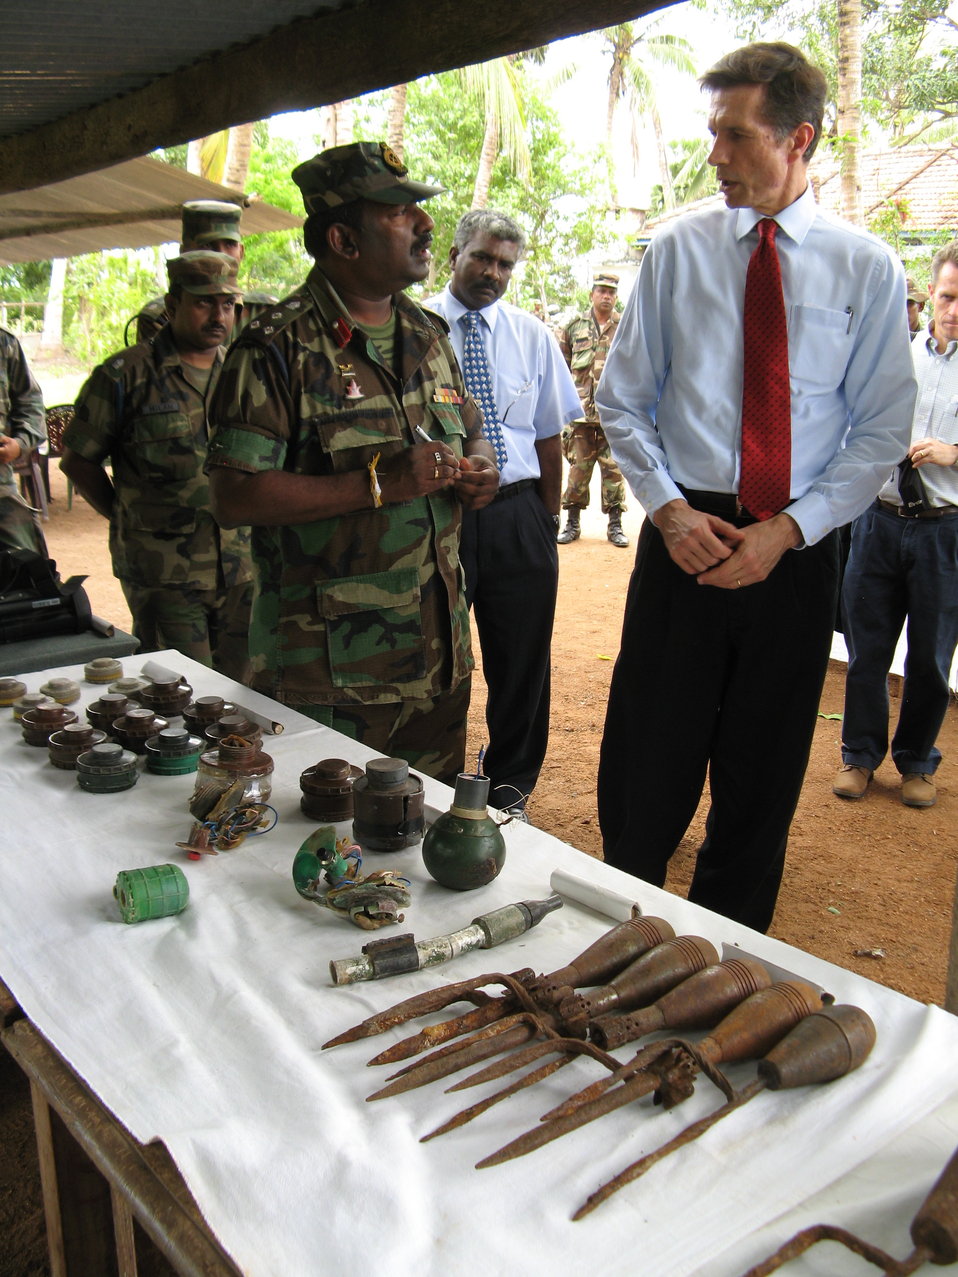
Assistant Secretary Blake Speaks With Sri Lankan Soldiers

Assistant Secretary for South and Central Asian Affairs Robert O. Blake discusses de-mining activities with the Sri Lankan Army, November 2009.